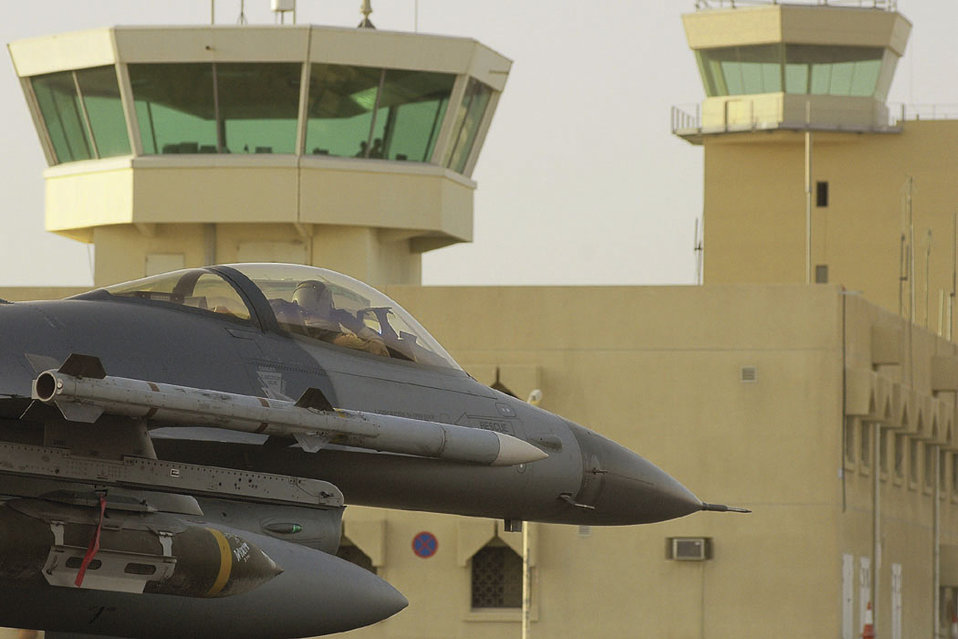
Drop 'em or not, pilots help ground troops

SOUTHWEST ASIA -- Capt. Matt Bertelli taxis to the runway at a forward-deployed location. He recently dropped a 2,000-pound joint-direct attack munition on two football-field sized bunkers filled with insurgent ordnance and improvised explosive device paraphenalia. He is an F-16 Fighting Falcon pilot with the 125th Expeditionary Fighter Squadron.